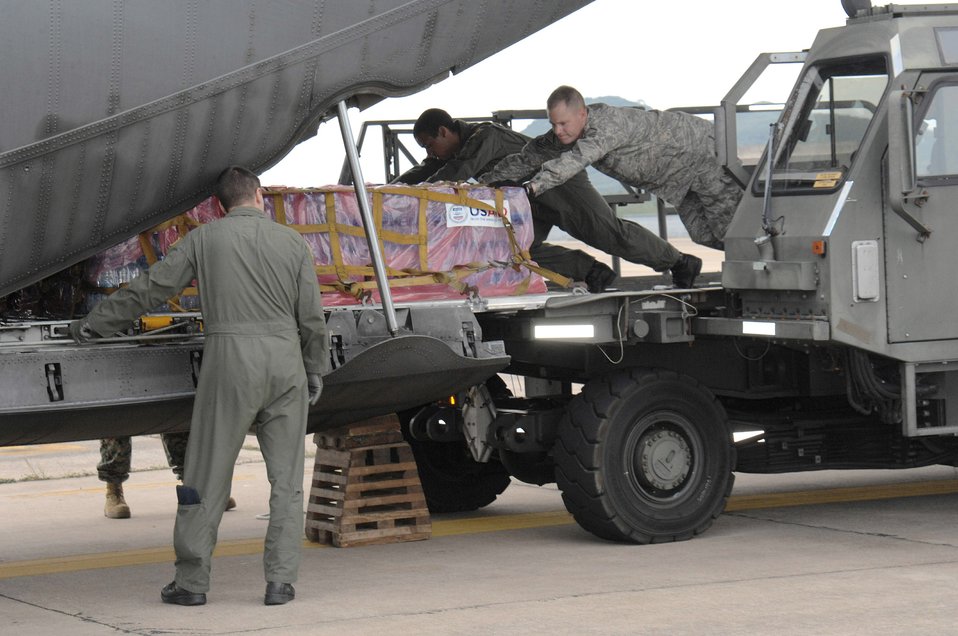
Airmen support Burma relief effort

Master Sgt. Todd Kneisly and Airman 1st Class Robert Gore load a C-130 Hercules with humanitarian relief supplies for victims of Burma May 12 at Utapao Air Base, Thailand. The relief supplies are for those who were struck by Cyclone Nargis May 2. As of May 12, a total of $3,250,000 in USAID, and humanitarian assistances has been provided to Burma. Sergeant Kneisly is assigned to the 36th Mission Response Squadron from Andersen Air Force Base, Guam, and Airman Gore is assigned to the 36th Airlift Squadron, Yokota Air Base, Japan,